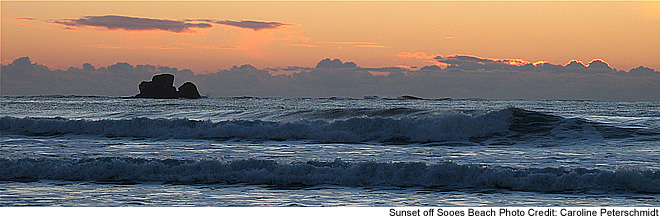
Sunset at Sooes Beach - Copalis National Wildlife Refuge

Sooes Beach is located on the northern stretches of Copalis National Wildlife Refuge.